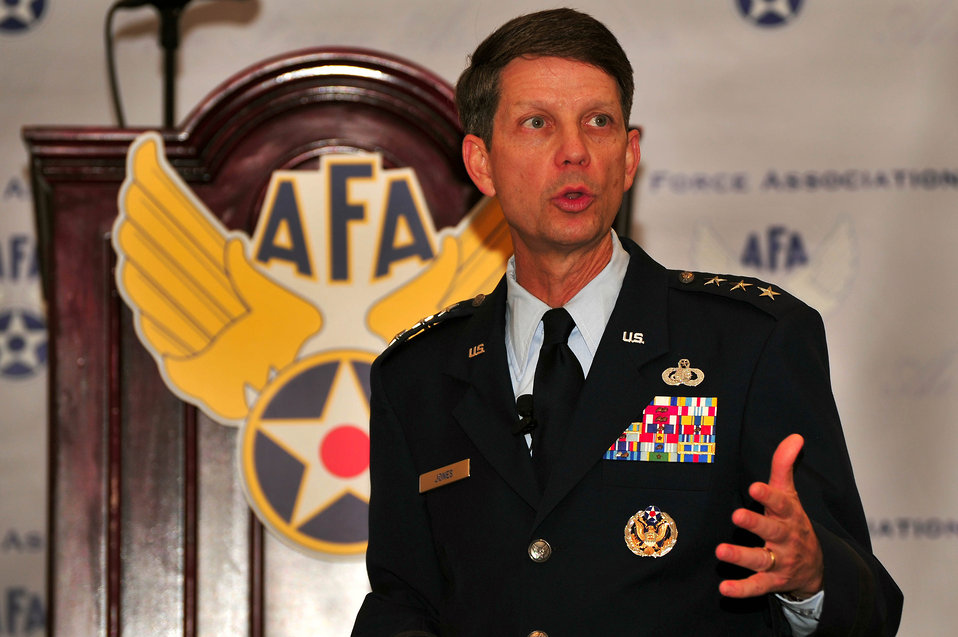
2012 AFA Convention

Lt. Gen. Darrell Jones, deputy chief of staff for manpower, personnel and services, speaks about services that Airmen still find important in everyday life during the 2012 Air Force Association Conference, Sept. 17, in Washington, D.C. Jones noted